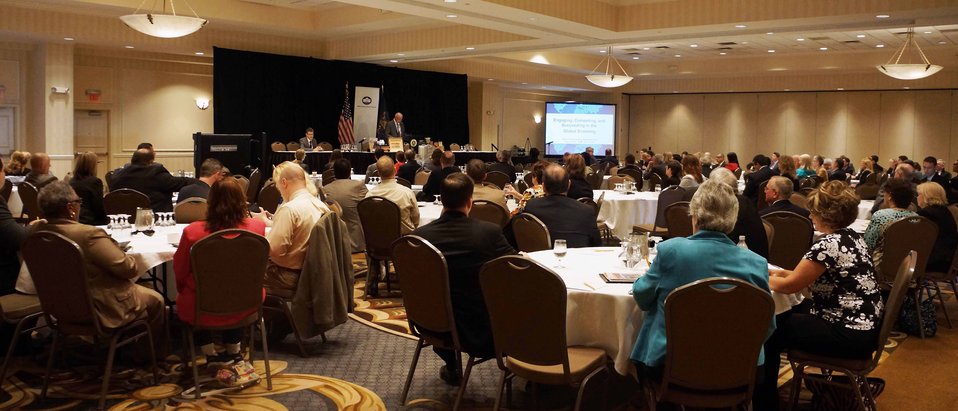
The audience awaits Agriculture Secretary Tom Vilsack’s Keynote Inaugural address at the “Made in Rural America Regional Forum” in Canonsburg, PA on Jun. 4, 2014. USDA photo Dawn Bonsell.